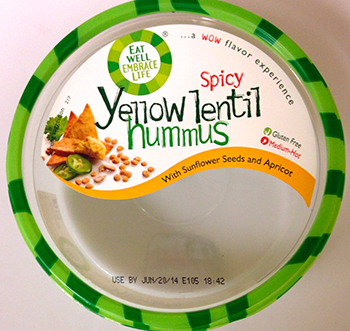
RECALLED – Hummus and dip products

May 19, 2014 – Product Recall – Lansal, Inc. Voluntarily Recalls Hummus & Dip Products Due to Possible Health Risk.